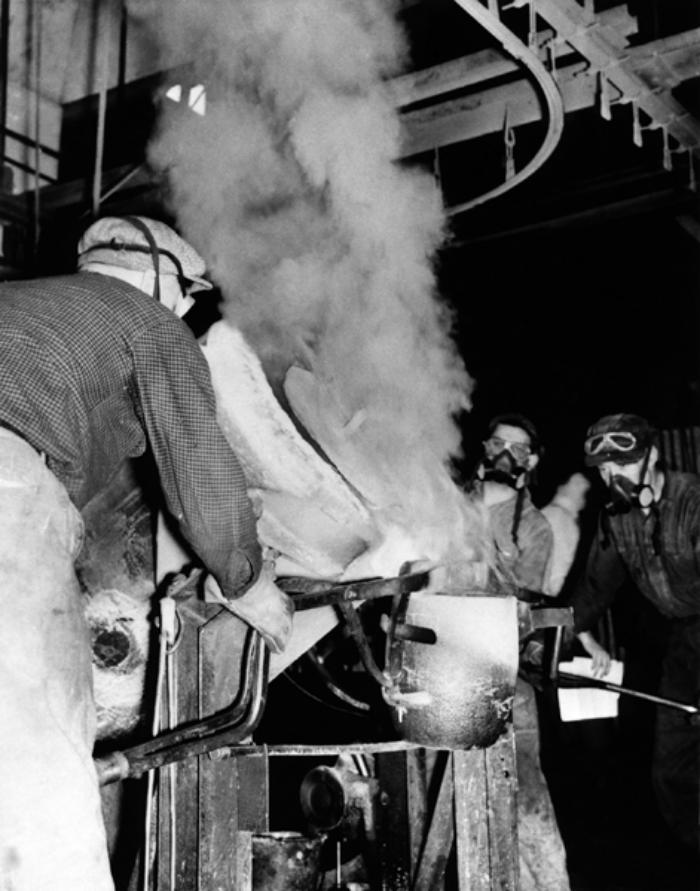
This historical photograph was provided by the Center for Disease Control's (CDC), National Institute for Occupational Safety and Health (NIOSH). The image depicted three men working in a foundry, processing molten metal. All three men were properly wearing respirators, though only two had their goggles in place. In the enclosed building, the indoor air pollutants given off as a result of the smelting process were quite visible.